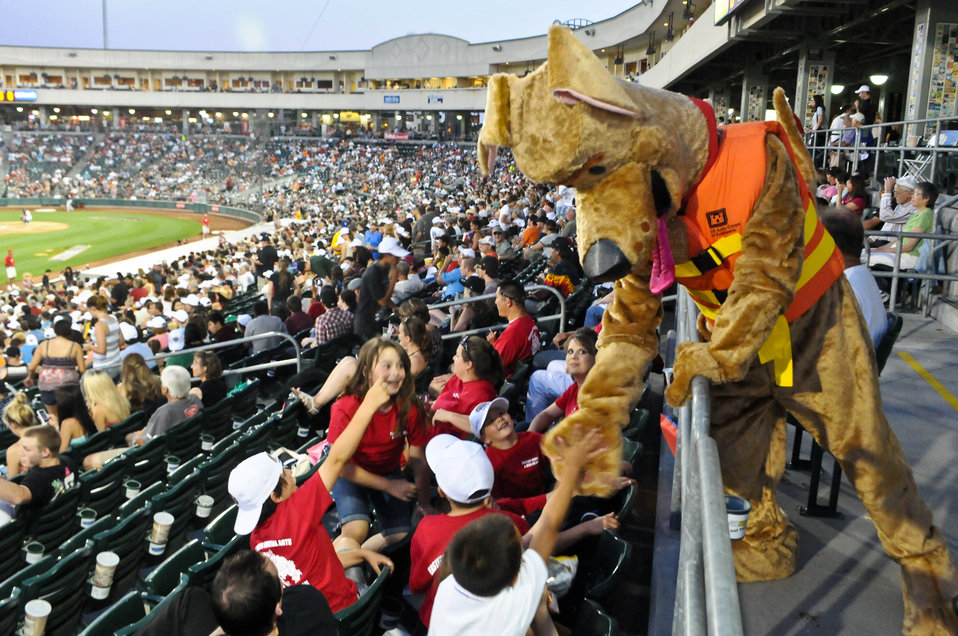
Bobber the Water Safety Dog low-fives fans

Bobber the Water Safety Dog from the U.S. Army Corps of Engineers Sacramento District hands out low-fives during the Sacramento River Cats’ water safety night game May 31, 2012 in West Sacramento, Calif. Bobber joined Sacramento District park rangers to share water safety tips with the more than 9,000 River Cats fans in attendance.